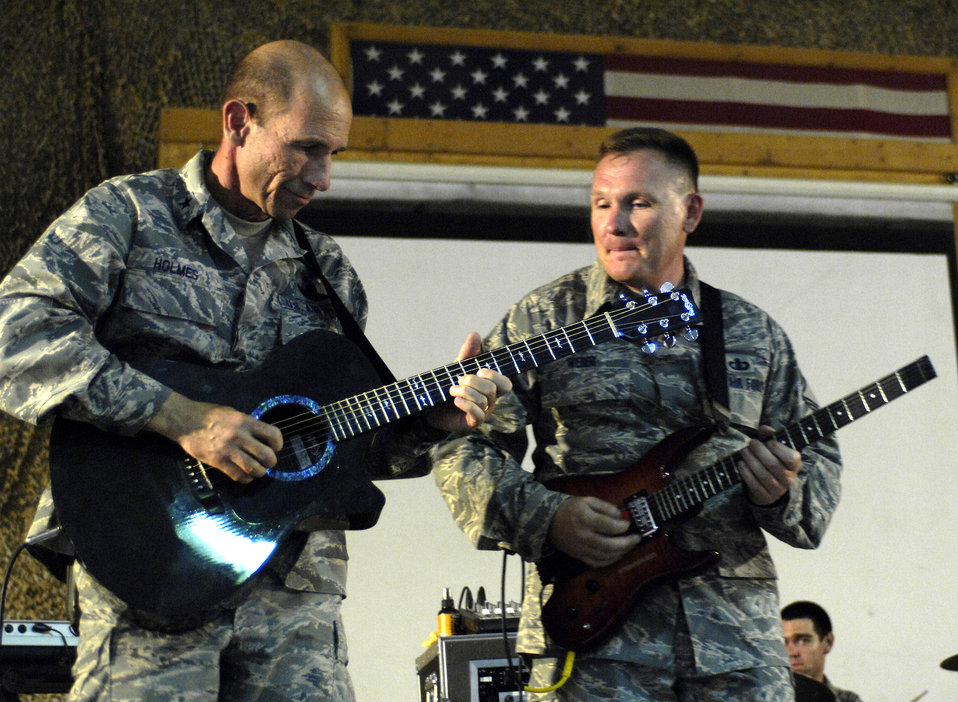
'Falcon' lands in Afghanistan

Brig. Gen. James M.